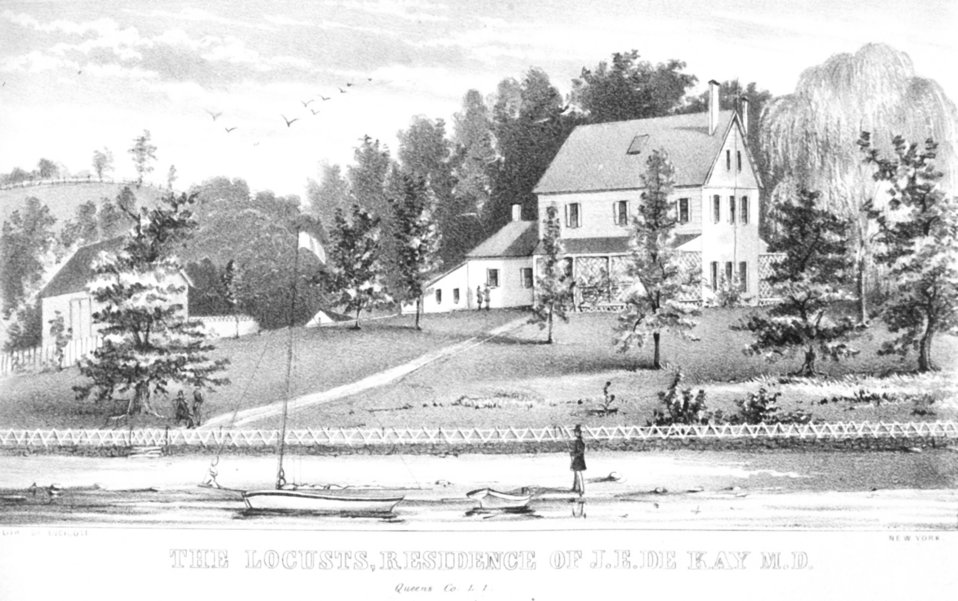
The Locusts, Residence of J.E. De Kay, M.D.